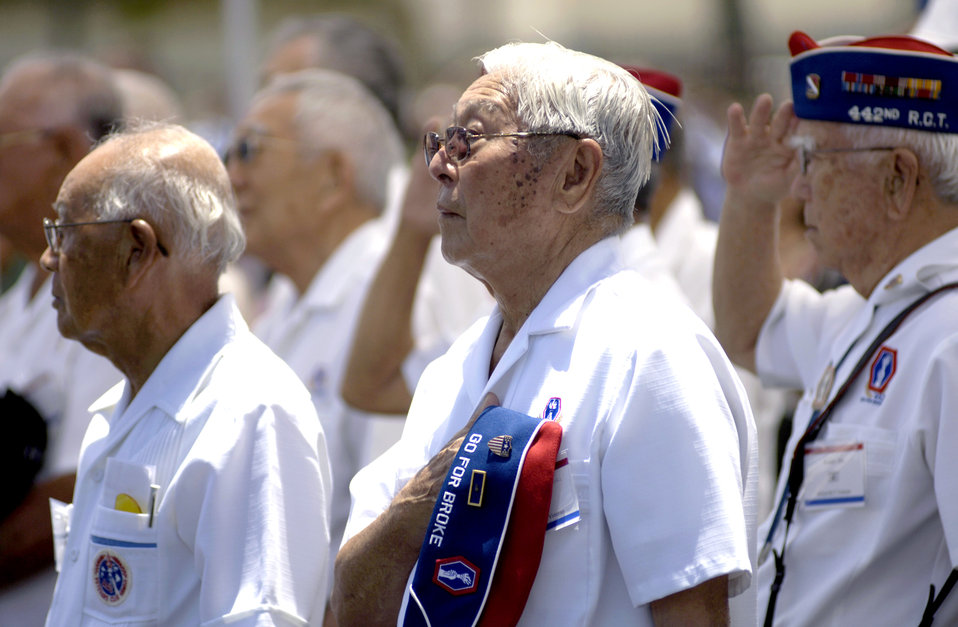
Hickam honors World War II vets with new C-17

Veterans from the 442nd Regimental Combat Team stand for the National Anthem during a C-17 Globemaster III arrival ceremony at Hickam Air Force Base, Hawaii, on Wednesday, June 14. The